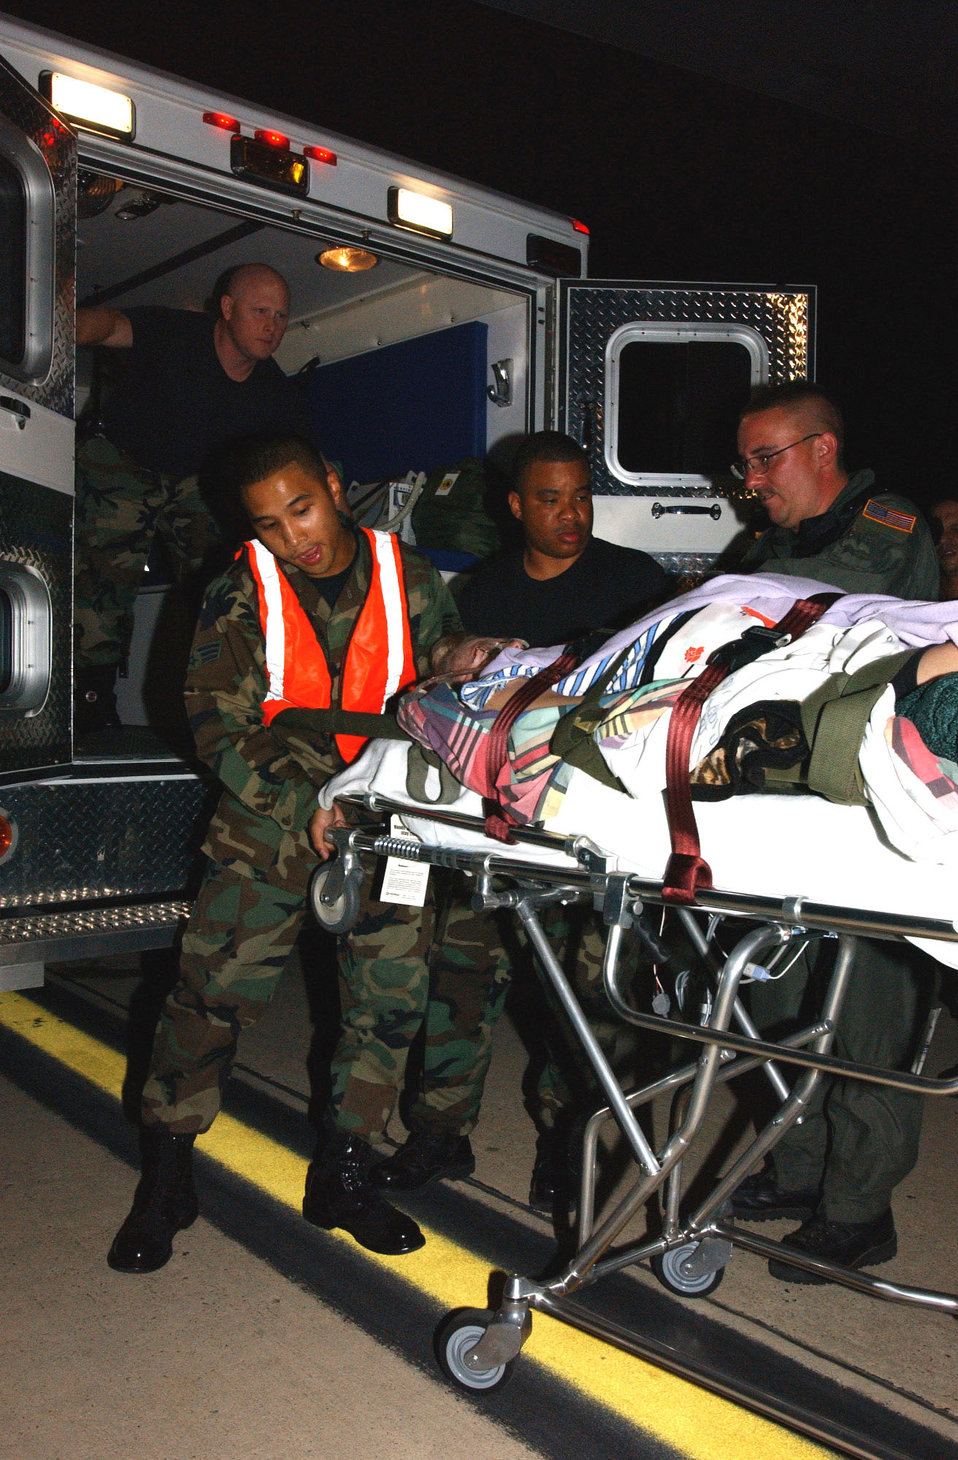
Hurricane Katrina medical evacuations

LACKLAND AIR FORCE BASE, Texas -- Medical patients evacuated from Keesler Air Force Base, Miss., in the wake of Hurricane Katrina are unloaded from a C-130 Hercules here Aug. 30. Their medical care will be continued at Wilford Hall Medical Center. The C-130 and aircrew are from the Puerto Rico Air National Guard.